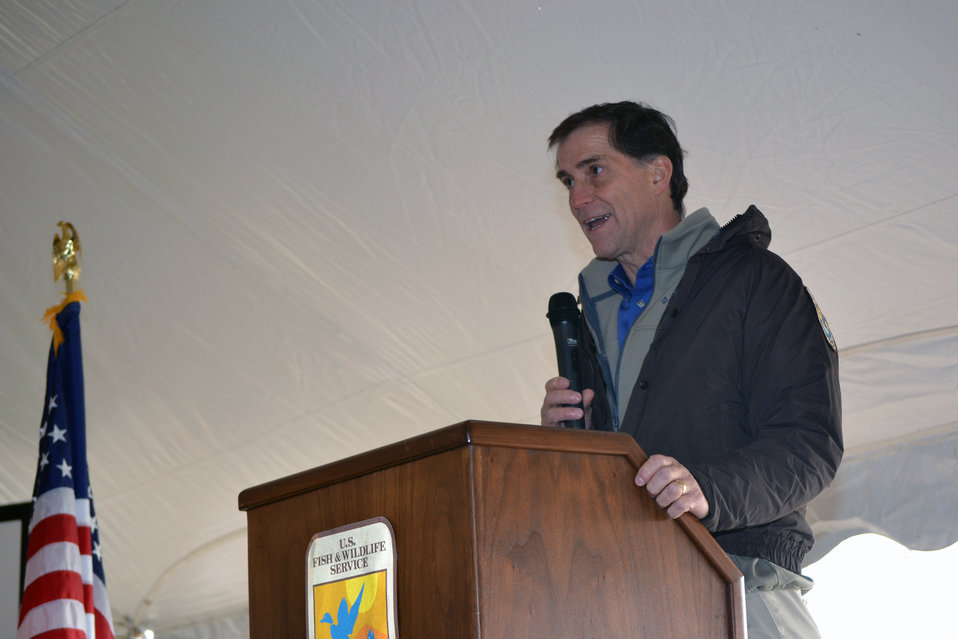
Director Ashe

Detroit River International Wildlife Refuge groundbreaking celebration.